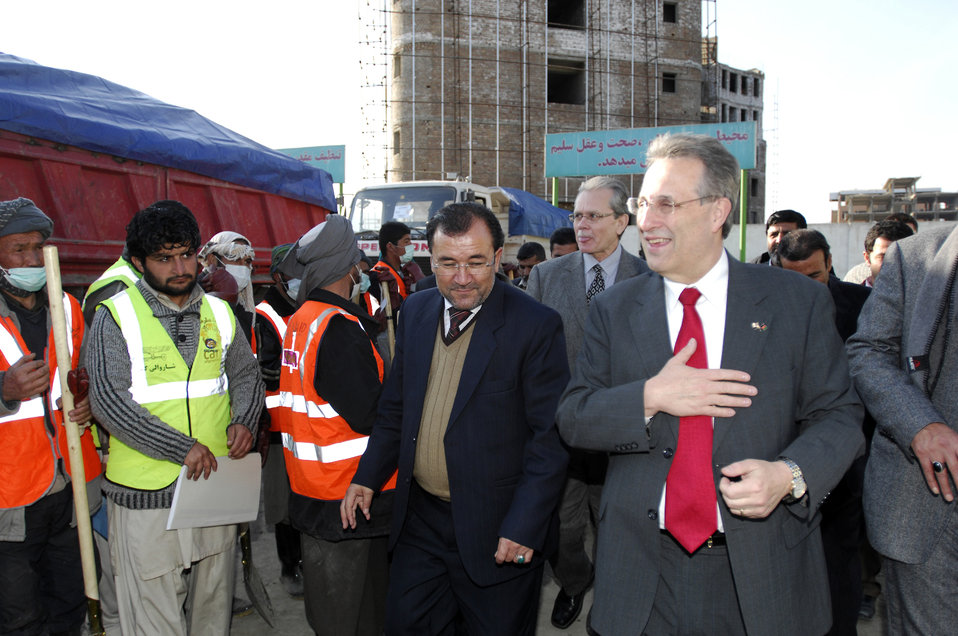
Care40